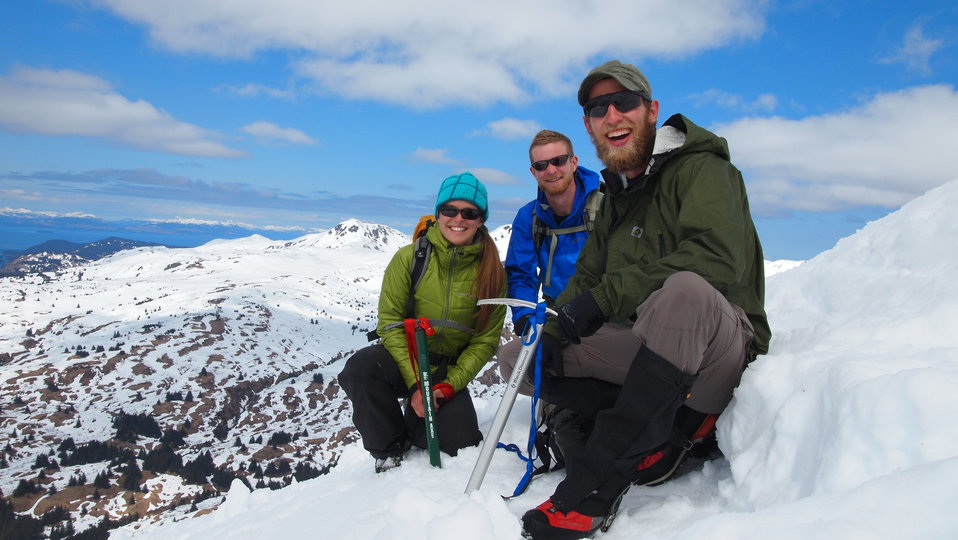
2012-Kodiak-Serve(02)

Snowy Smiles
Mountain Goat Research Crew Leader and volunteer interns take a break from hiking the beautiful mountain of Southeast Kodiak.

Contact: Lisa Hupp@fws.gov

Source: Kodiak NWR